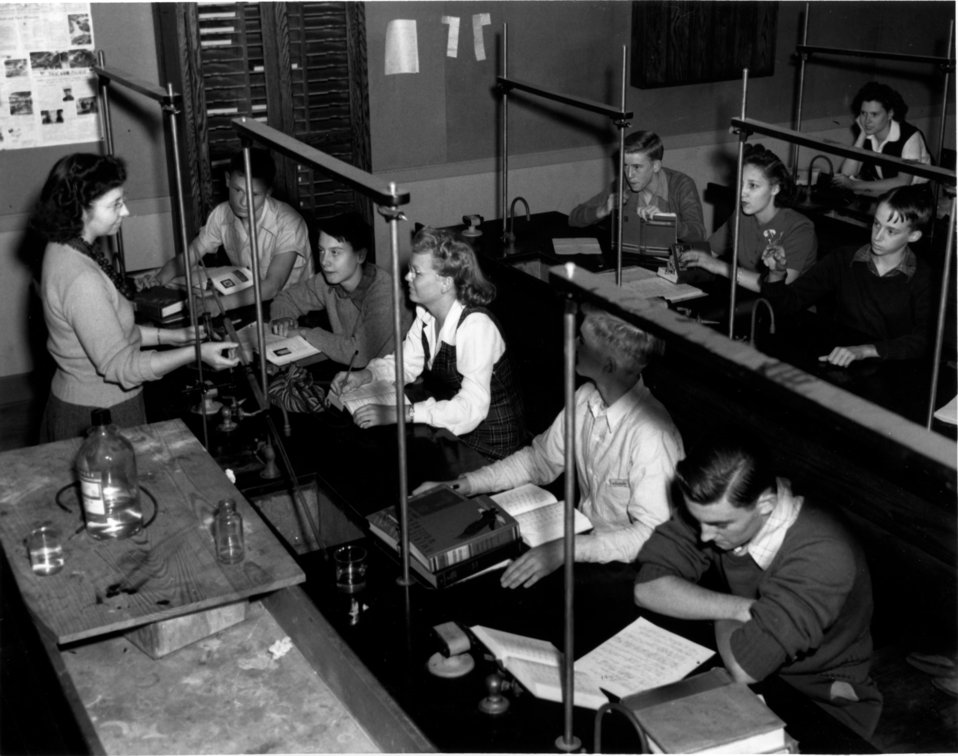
Schools at Oak Ridge